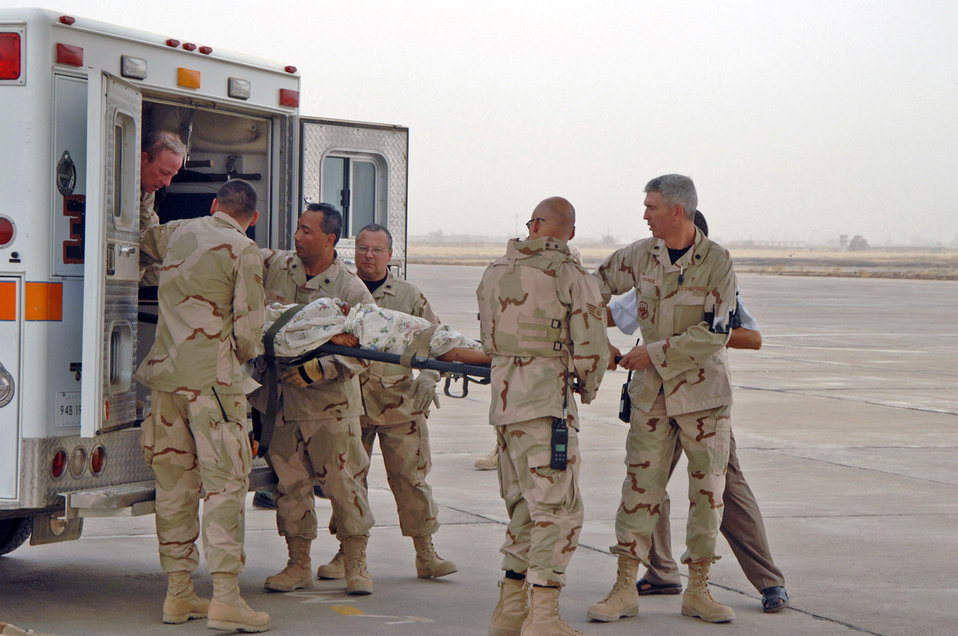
Airmen lead multinational effort for Iraqi bombing victims

Members of the 506th Air Expeditionary Group help transport Iraqi vehicle borne improvised explosive device victims to a Turkish airplane during a multinational humanitarian airlift effort July 8 at Kirkuk Air Base, Iraq. The victims were hurt in the July 7 market bombing in Tuz Khurmato, Iraq. Airmen from the 506th AEG worked with Iraqi medical providers and Turkish army and air force members to receive, transfer and aerovac almost 30 injured Turkmen civilians and family members to the Turkish capital city of Ankara for further treatment.